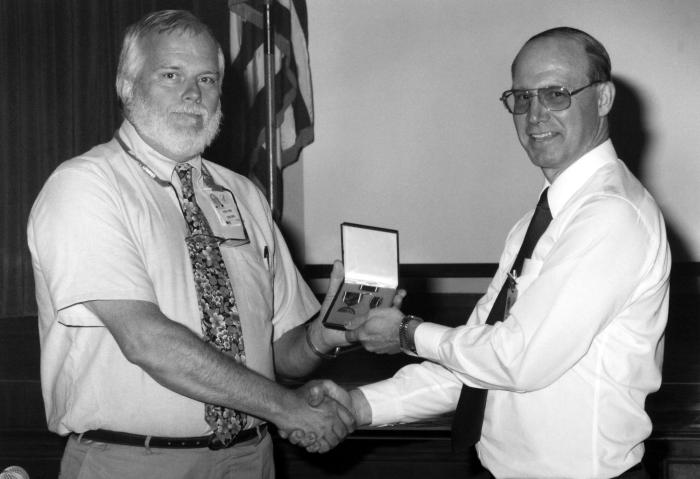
This photograph shows Dr. Jonathan Richmond, who at the time was the Director of the Centers for Disease Control's Office of Health and Safety (left), as he was receiving a 1993 CDC Achievement Award from Dr. David Taylor of the Office of Health and Safety.